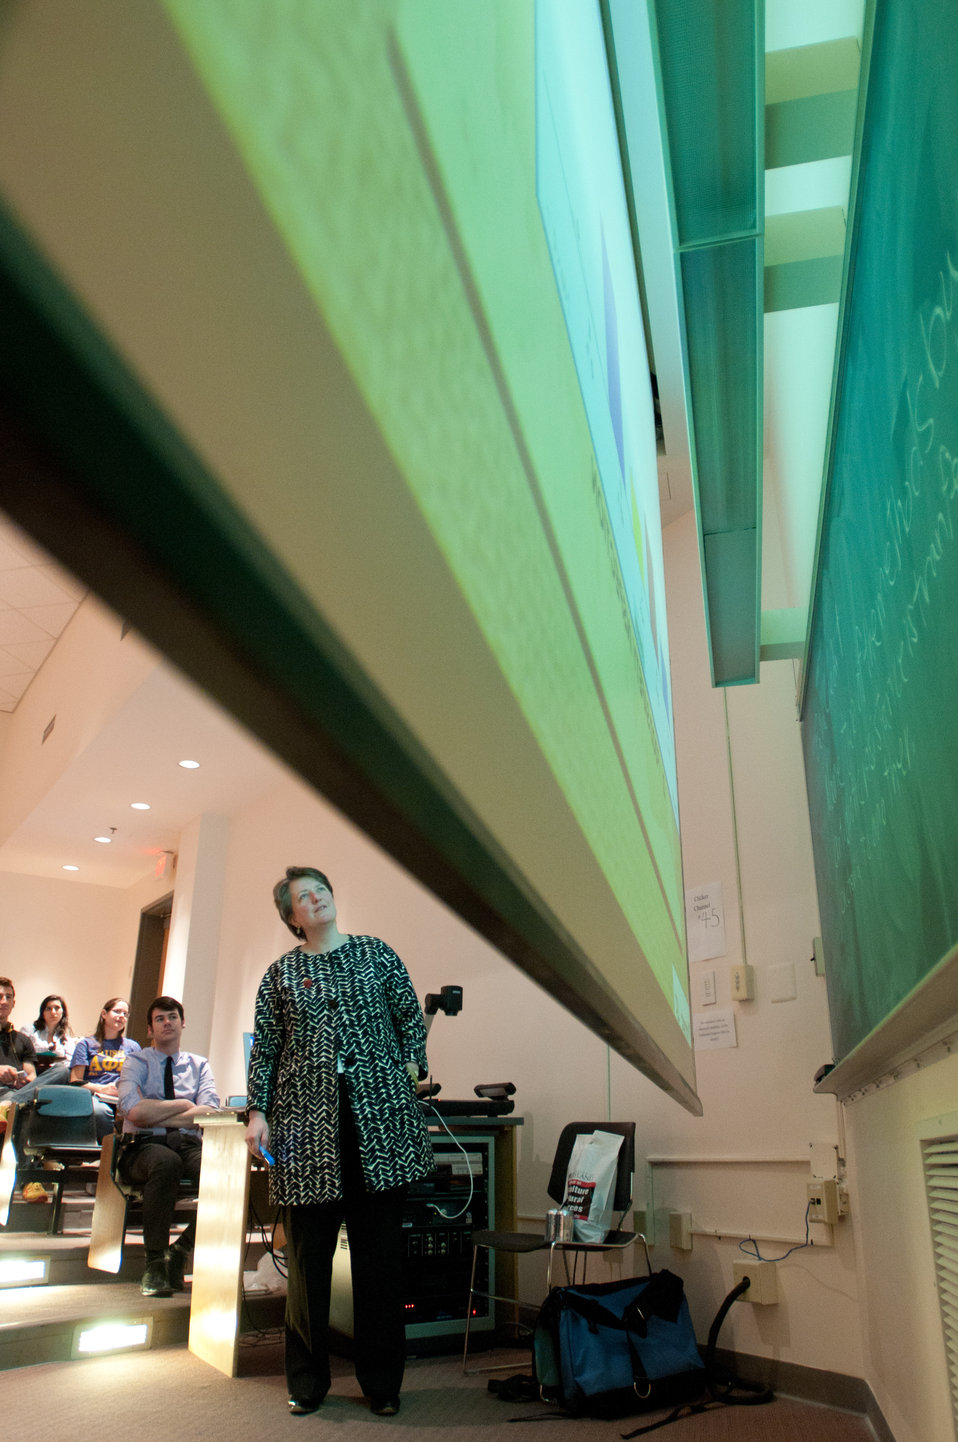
U.S. Department of Agriculture (USDA) Deputy Secretary Kathleen Merrigan looks up at the polled audience response being projected on a screen, during the presentation of the “Know your Farmer Know your Food” initiative to students and faculty at the Animal Sciences / Agricultural Engineering Building at the University of Maryland, in College Park, MD, on Thursday, April 7, 2011. Deputy Secretary Merrigan’s interactive presentation utilized wireless polling in the lecture room to present questions to the audience who used handheld devices to choose from a list of multiple answers. Their answers were instantly tabulated, then Merrigan revealed their top choice on the screen, followed by the correct answer, usually revealing an error and misconceptions. Her talk covered support of local farmers; strengthening rural communities, promoting healthy eating, protecting natural resources; grants, loans and other support USDA provides as well as stories of innovation; industry and government cooperation; and careers opportunities in agriculture, ranching and the USDA.